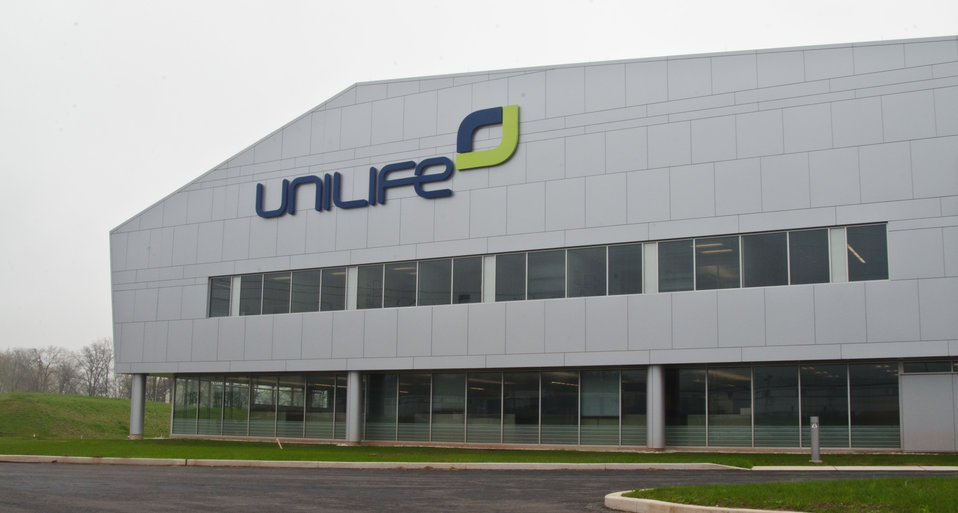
Unilife is a medical device company focused on the design, development, manufacture and supply of a proprietary range of retractable syringes on Monday, Monday, April 20, 2011 in York, PA. In partnership with Sanofi-aventis, Mikron Group, and MDMA, U.S. Department of Agriculture Rural Development was able to guarantee $18,000,000 through its Business and Industry Guaranteed Loan Program to construct a custom-built, global headquarters and commercial production facility in York, Pennsylvania. The 165,000 sq. ft. facility was completed in late 2010 and can accommodate future growth as well as the Company’s projected demand from pharmaceutical and healthcare companies for its proprietary range of Unifill ready-to-fill (prefilled) and Unitract general purpose safety syringes. Stage one of the facility is designed to accommodate the production of up to 400 million Unilife syringes per year and to meet stringent pharmaceutical standards for primary drug containers. Adjacent to the manufacturing facility is Unilife’s global headquarters (grey exterior) that support administrative, marketing, new product development, quality laboratories and other operational functions. Unilife, which first arrived in Pennsylvania in 2006. The company has doubled its employees for the past three years. There are approximately 150 employees, and they expect to double the number by 2015.